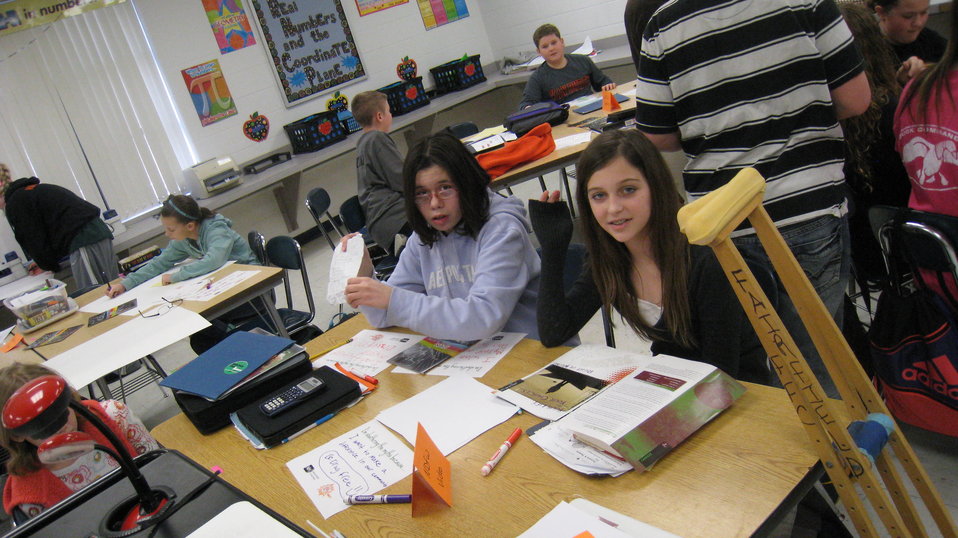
Teens Shatter the Myths: NDFW 2014

Teenagers from the Van Buren County SAFE Coalition's, Youth Leadership Council (YLC) in Keosauqua, Iowa participate in various events during National Drug Facts Week, 2014.